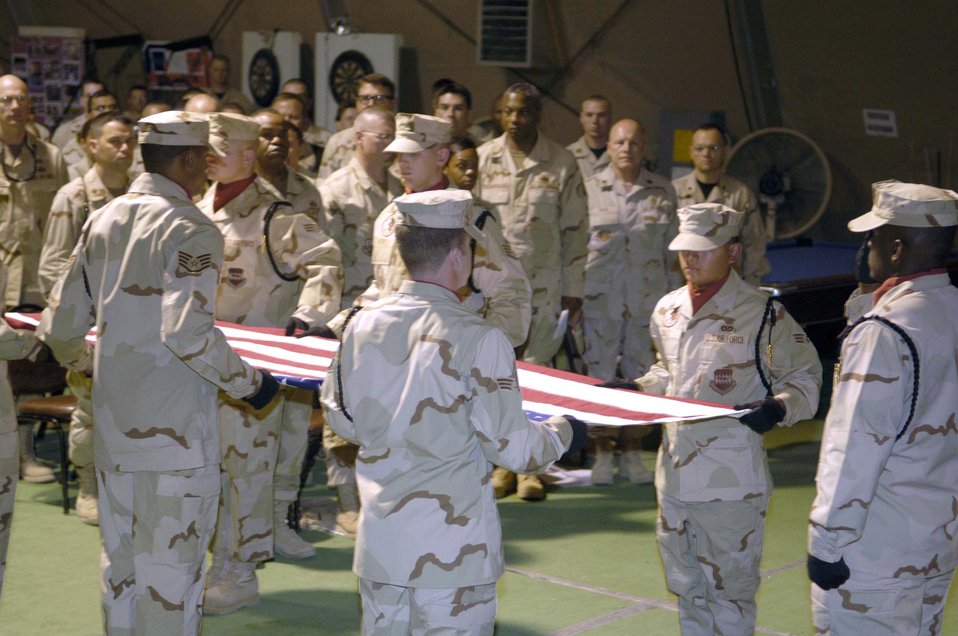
Airmen, Soldiers say farewell to comrade in Iraq

In a formal salute to Master Sgt. Brad A. Clemmons, the 332nd Air Expeditionary Wing honor guard performs a flag folding ceremony during a memorial service at Balad Air Base, Iraq, Aug. 24. Sergeant Clemmons died Aug. 21 when his vehicle struck an improvised explosive device near Taji, Iraq.